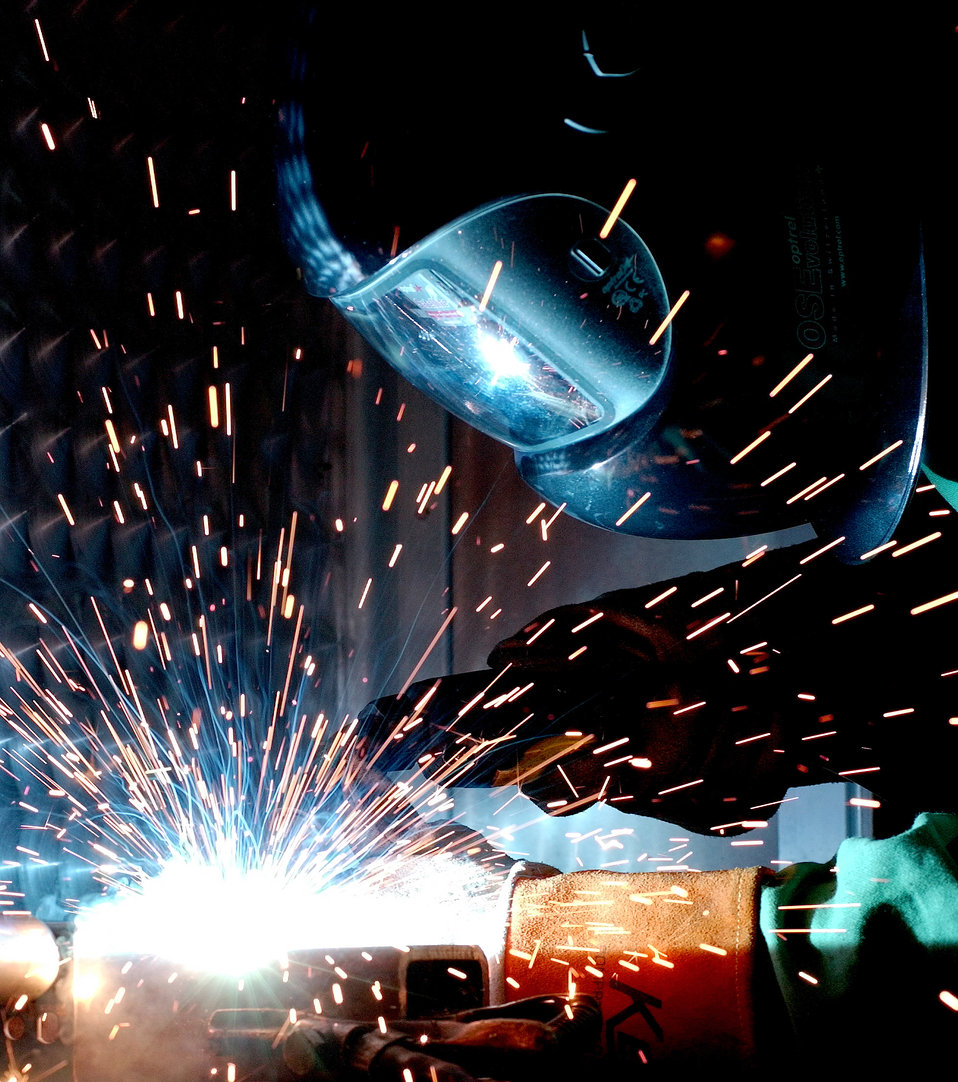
Welding it together

DOVER AIR FORCE BASE, Del. -- Airman 1st Class Jonathan Trammell welds a part on the remodeled mortuary transfer vehicle. Airmen from the metal technology shop here redesigned the inside of the truck to increase the capacity from two to six transfer cases. Airman Trammell is assigned to the 436th Equipment Maintenance Squadron.